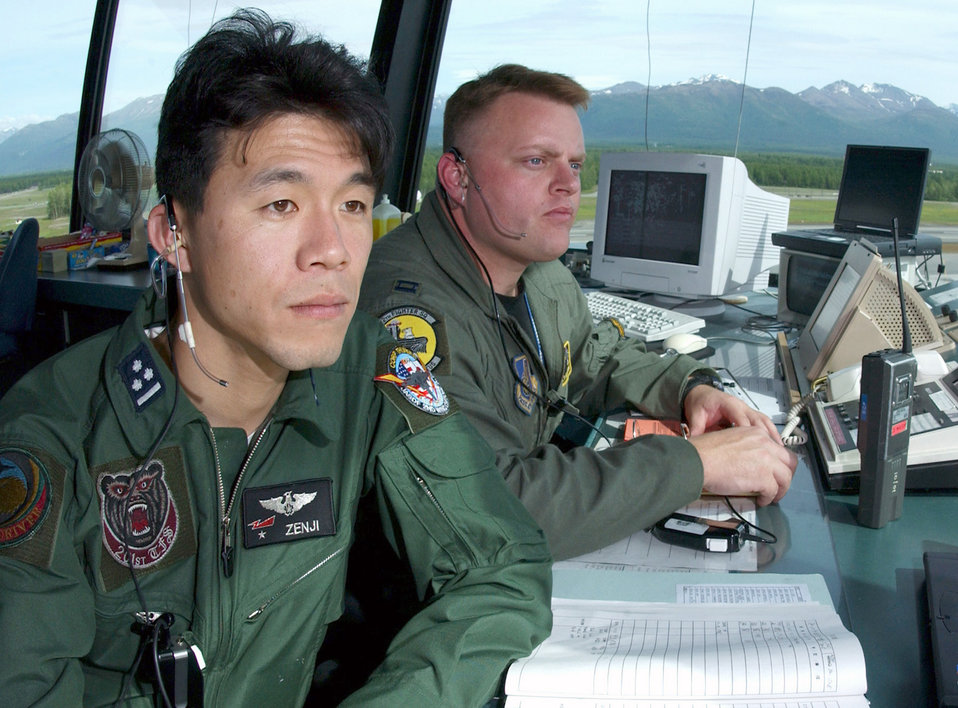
Cooperative Cope Thunder

ELMENDORF AIR FORCE BASE, Alaska (AFPN) - Japanese Capt. Yoshifumi Nakamura, an F-15 pilot, and Capt. Barley Baldwin, from the 12th Fighter Squadron here, supervise flying operations from the air traffic control tower as Japanese aircraft taxi for take off during Cooperative Cope Thunder.